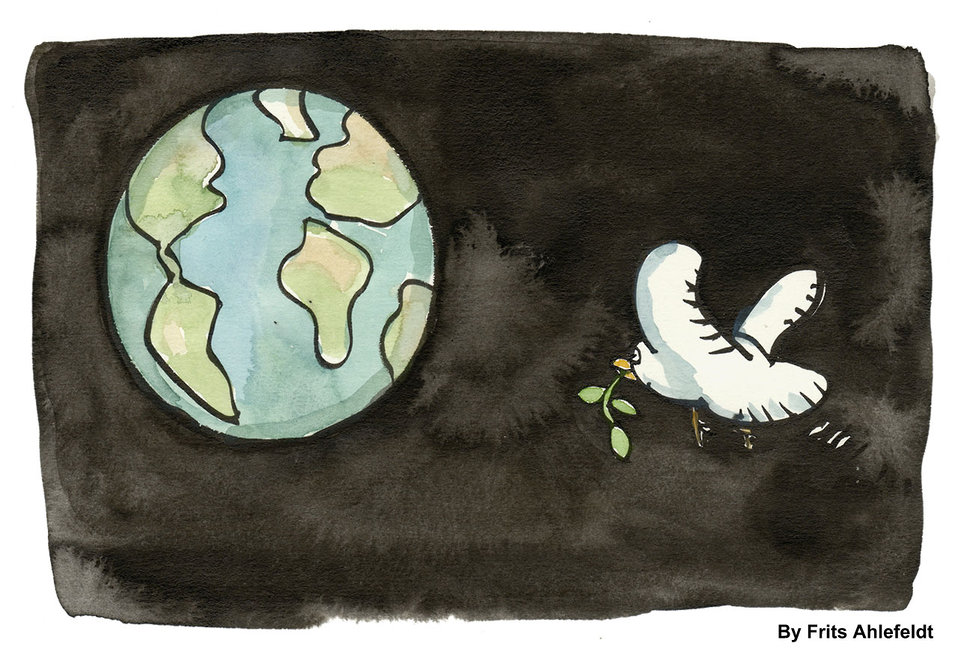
Pigeon coming back from outer space

Pigeon with a leaf in its beak flying towards earth.